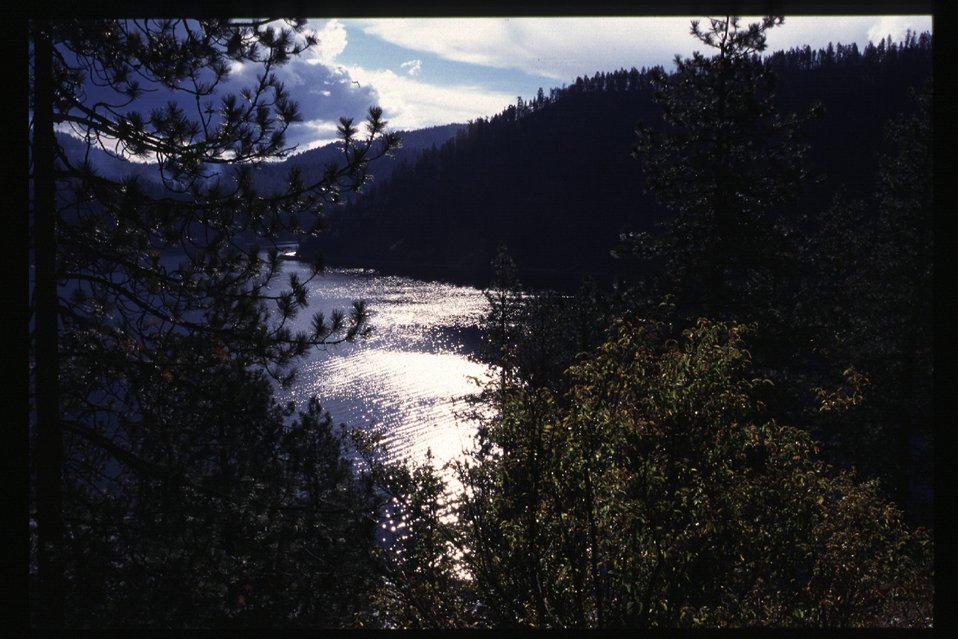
Scenic view from Beauty Bay Couer d'Alene Field Office UCSC Upper Columbia Salmon Clearwater District